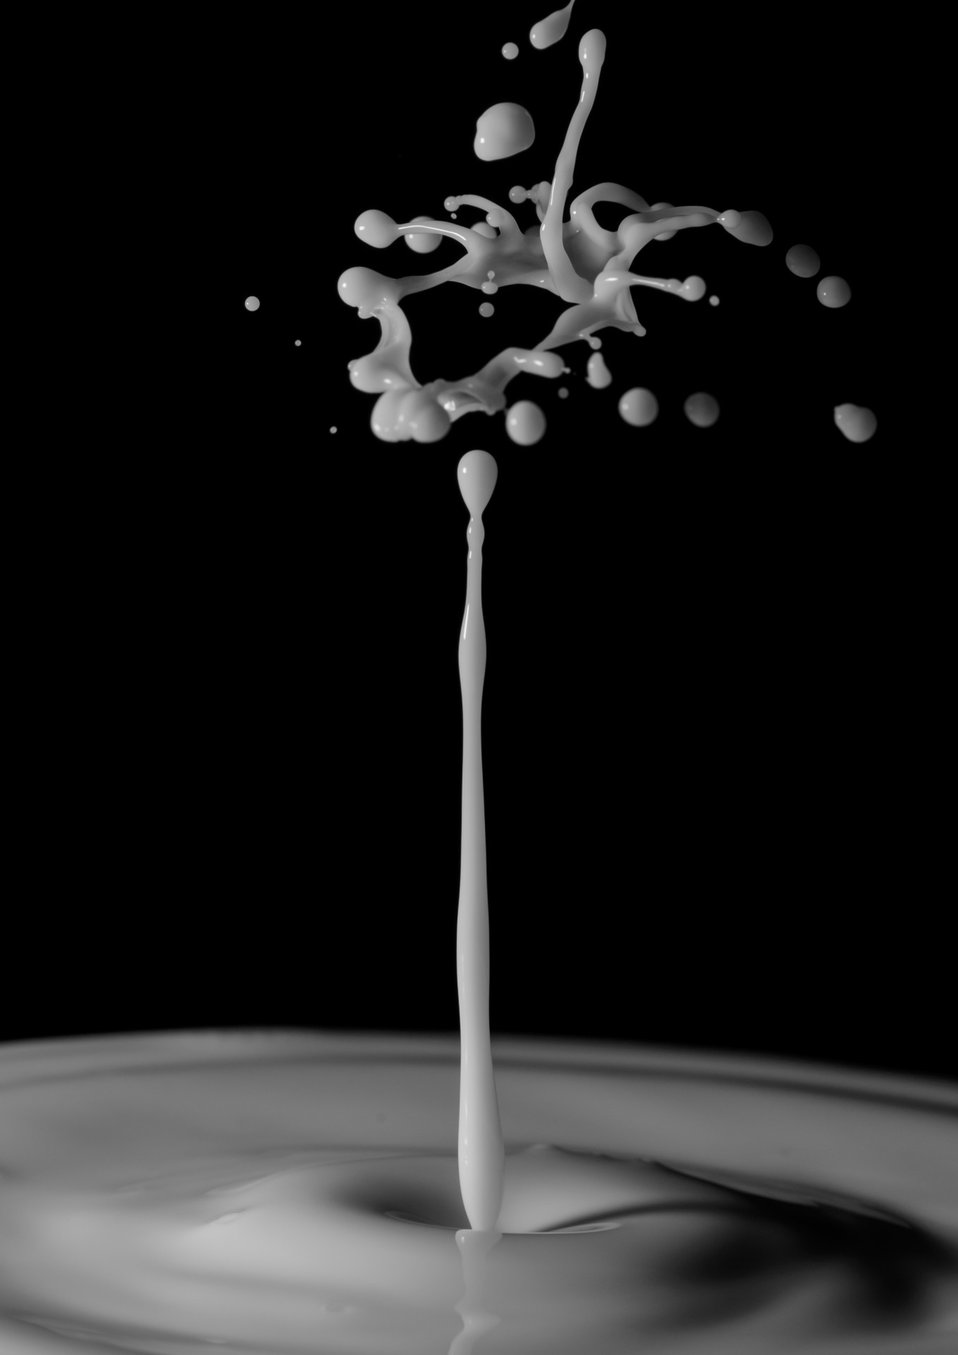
Dairy chaos.